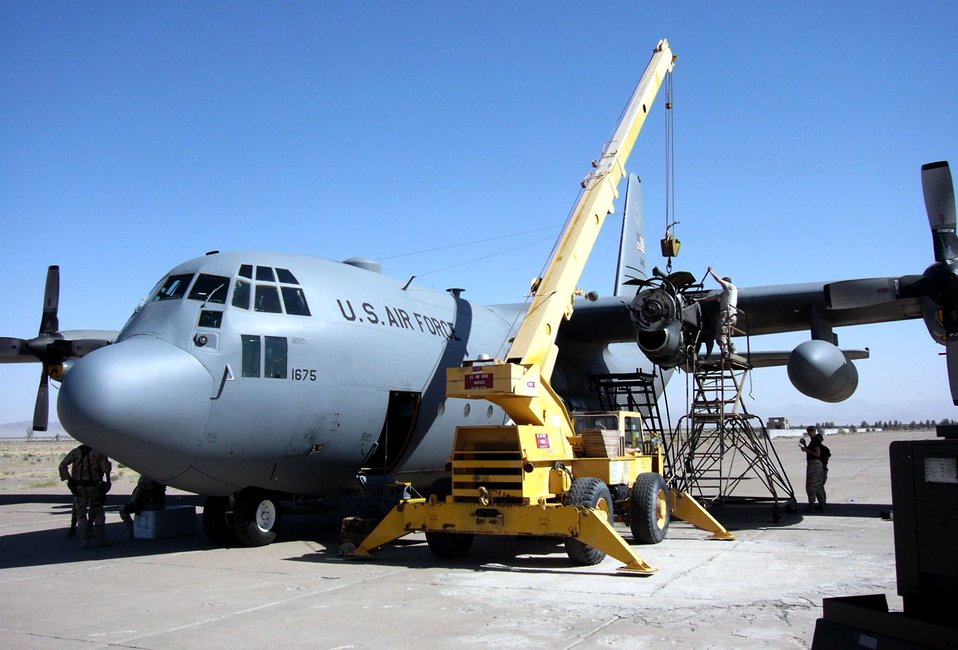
Airmen put C-130 back in the fight

Maintenance repair teams from Bagram Air Base, Afghanistan, and the 379th Air Expeditionary Wing from Southwest Asia change the engine of a C-130 Hercules under harsh conditions May 25 at an abandoned air strip just outside of Shindand, Afghanistan. Security forces Airmen stood watch for about 50 hours to ensure the aircraft and crew were safe from harm while on the ground.